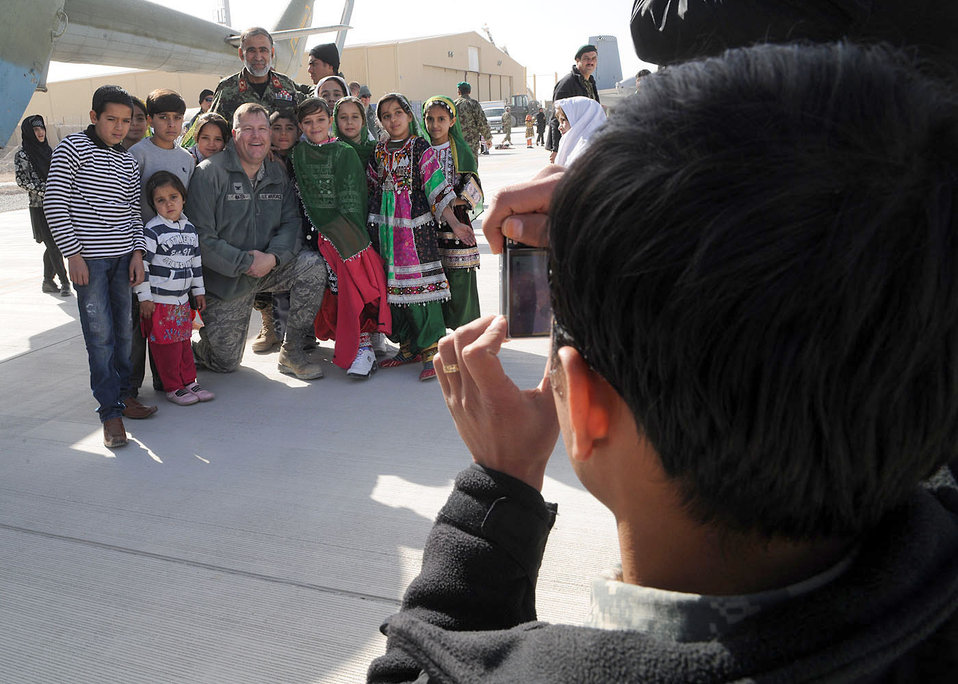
New Afghan facilities key for Kandahar Air Wing

An Afghan citizen takes a photograph of school children posing with Col. Bernard Mater and Afghan air force Brig. Gen. Mohammed Yousuf during the Kandahar Air Wing open house Jan. 1, 2011, at Kandahar Airfield, Afghanistan. The open house showcased the newly constructed facilities and the inventory of the force. Coalition forces, tribal elders and school children attended the event to foster the continued partnership between the Afghan national security forces and International Assistance Security Force. Colonel Mater is the 738th Air Expeditionary Advisory Group commander, and General Yousuf is the Kandahar AW commander.